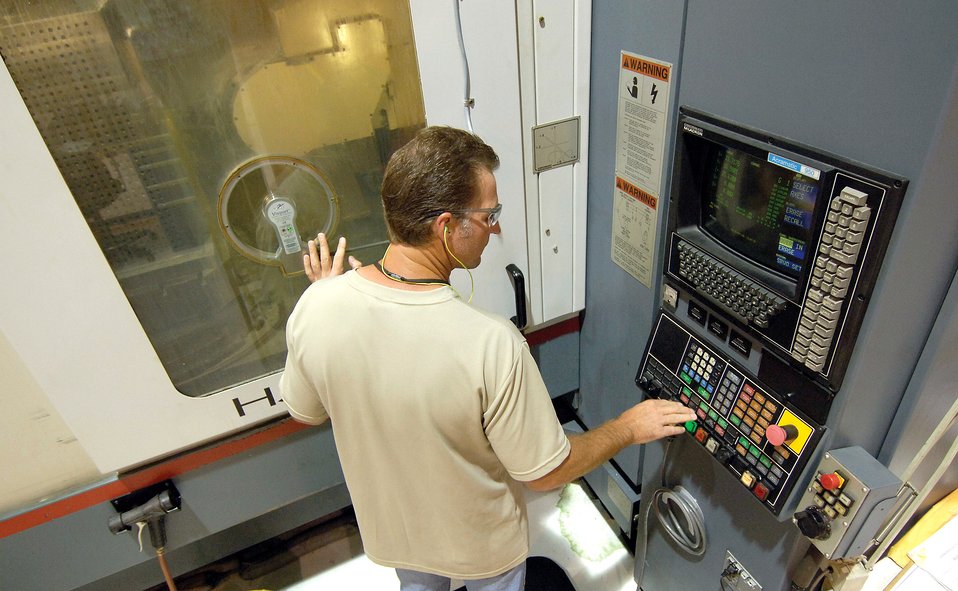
24-hour Tinkering: Maintenance around the clock

Paul Spurlock monitors a B-1B Lancer part being manufactured Oct. 2 at Tinker Air Force Base, Okla. Mr. Spurlock is a numerical controlled machining cell machinist.